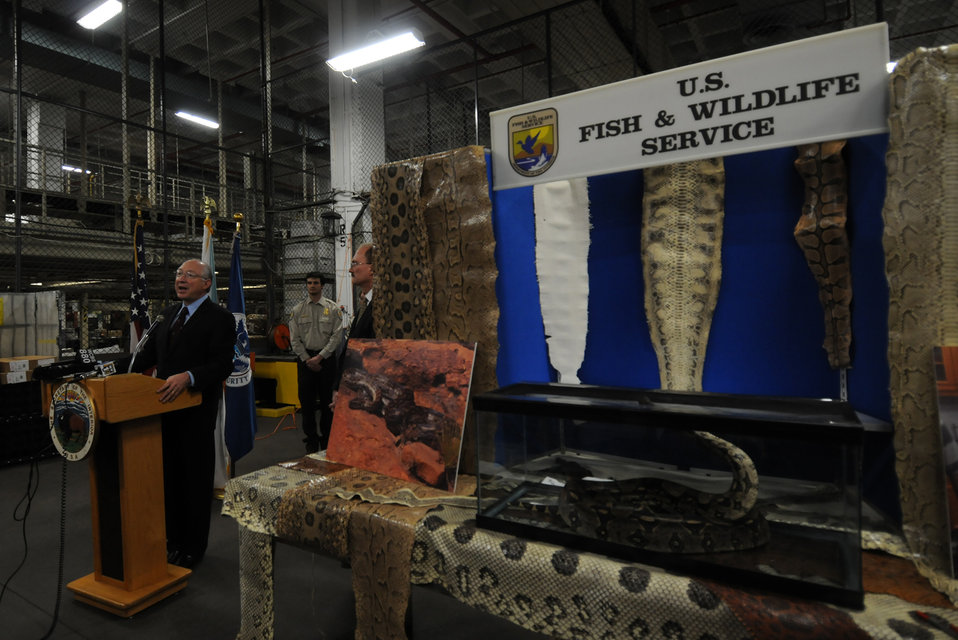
Secretary Salazar giving his speech

On January 20, Secretary of the Interior Ken Salazar visited the Port of New York to announce that the U.S. Fish and Wildlife Service will propose to list the Burmese python and eight other large constrictor snakes that threaten the Everglades and other sensitive ecosystems as “injurious wildlife” under the Lacey Act.